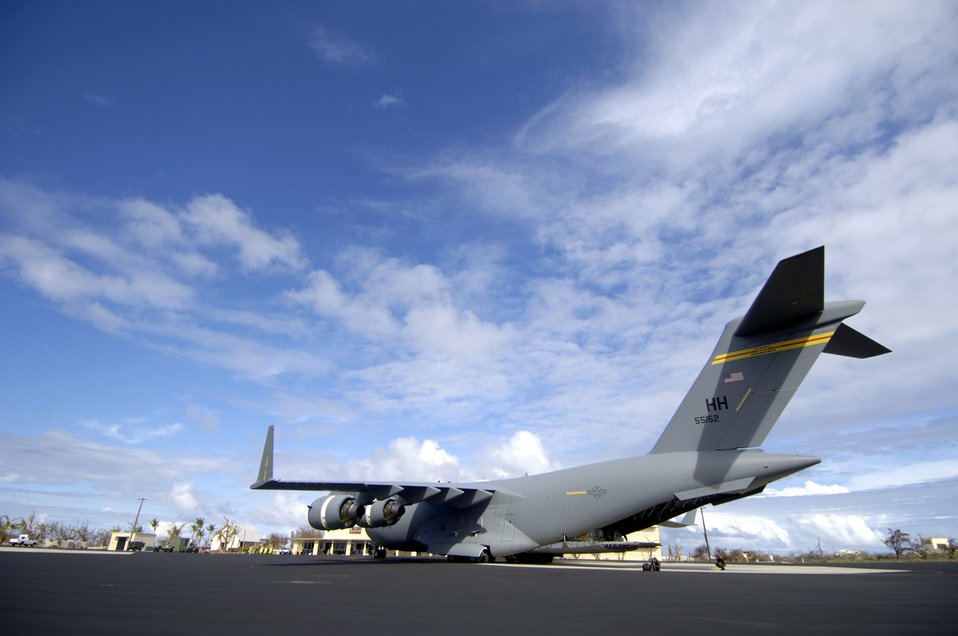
First look at Wake: Less damage than feared

A C-17 Globemaster III sits in front of the airfield operations building on Wake Island Sept. 12. The C-17, from the 535th Airlift Squadron at Hickam Air Force Base, Hawaii, flew a 53-person team to the island to assess damage left by Super Typhoon Ioke after it hit the island Aug. 31.